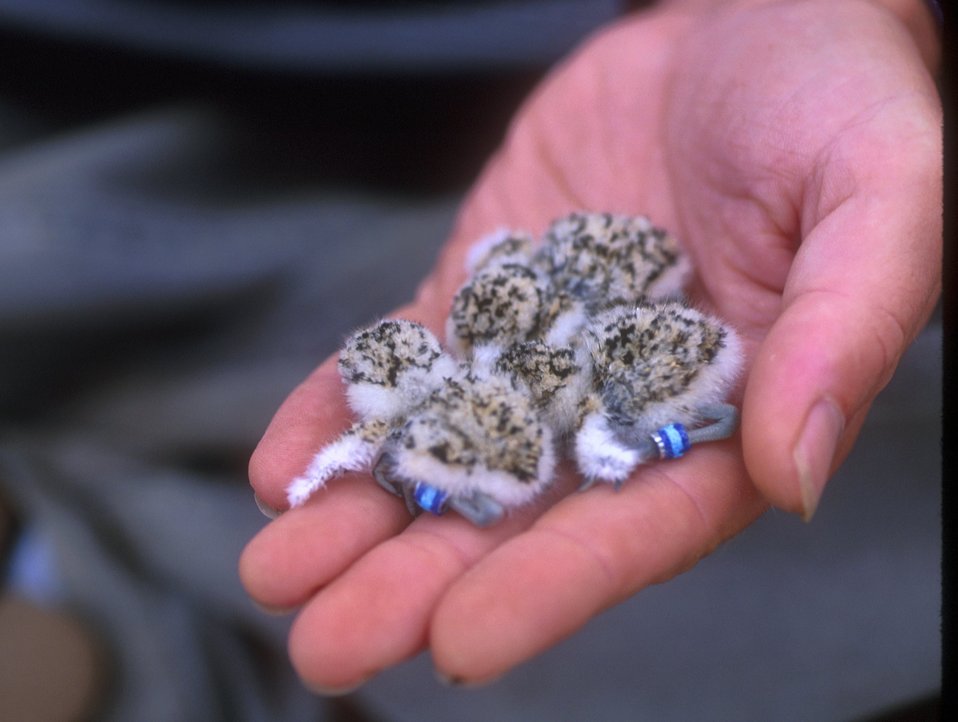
Western Snowy Plover with triple stripe bands